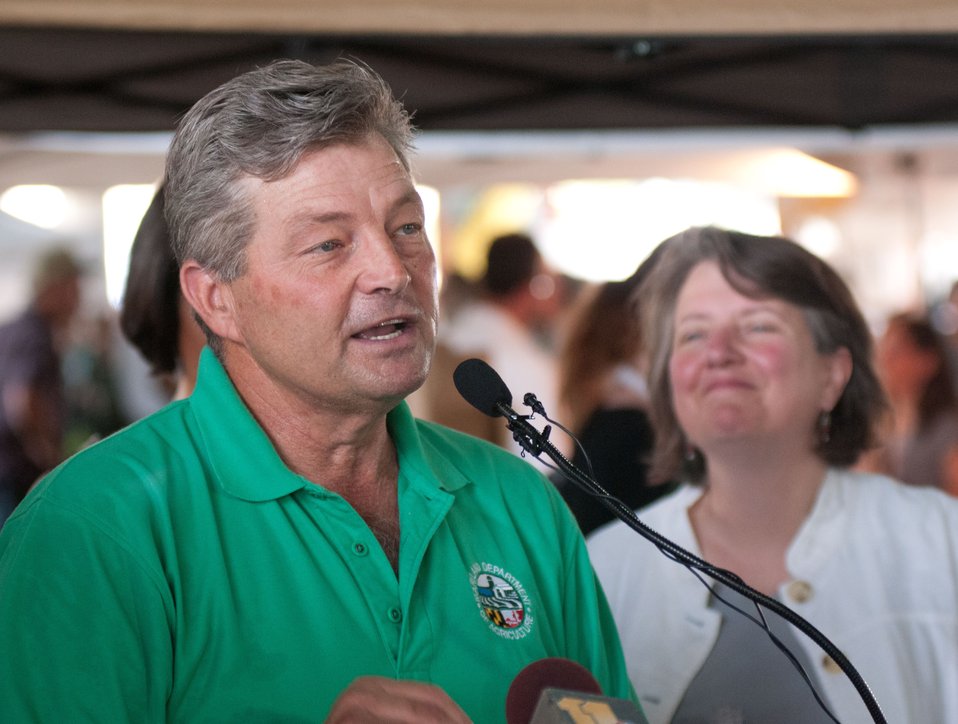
Maryland Department of Agriculture Secretary Earl F. (Buddy) Hance and Agriculture Deputy Secretary Kathleen Merrigan help launch Baltimore’s Farmers Market and Bazaar use of the U.S. Department of Agriculture’s (USDA) Food Nutrition Service’s (FNS) Supplemental Nutrition Assistance Program (SNAP) Electronic Benefits Transfer (EBT) cards, Baltimore Bucks, and debit cards utilizing a wireless connection in Baltimore, MD on Sunday, July 8, 2012. The U.S. Department of Agriculture, Kaiser Permanente of the Mid-Atlantic States, Abell Foundation, the Harry and Jeanette Weinberg Foundation, the Baltimore Community Foundation, Maryland Hunger Solutions, the Maryland Department of Agriculture Baltimore Office of Promotions and the Arts, and Department of Social Services are participating partners in the farmers market.